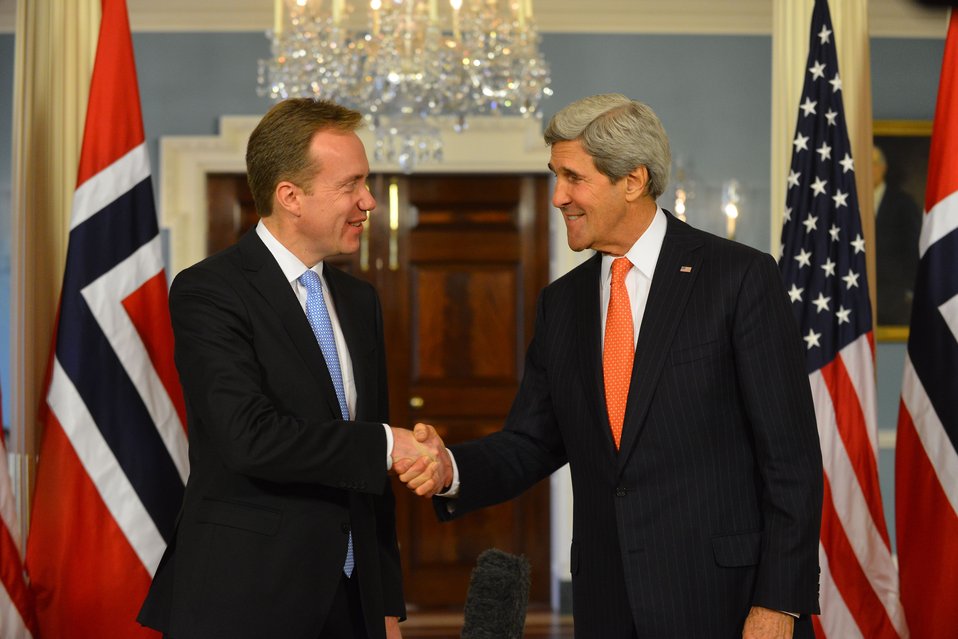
Secretary Kerry Shakes Hands With Norwegian Foreign Minister Brende

U.S. Secretary of State John Kerry shakes hands with Norwegian Foreign Minister Borge Brende after addressing reporters at the U.S. Department of State in Washington, D.C., on November 15, 2013.